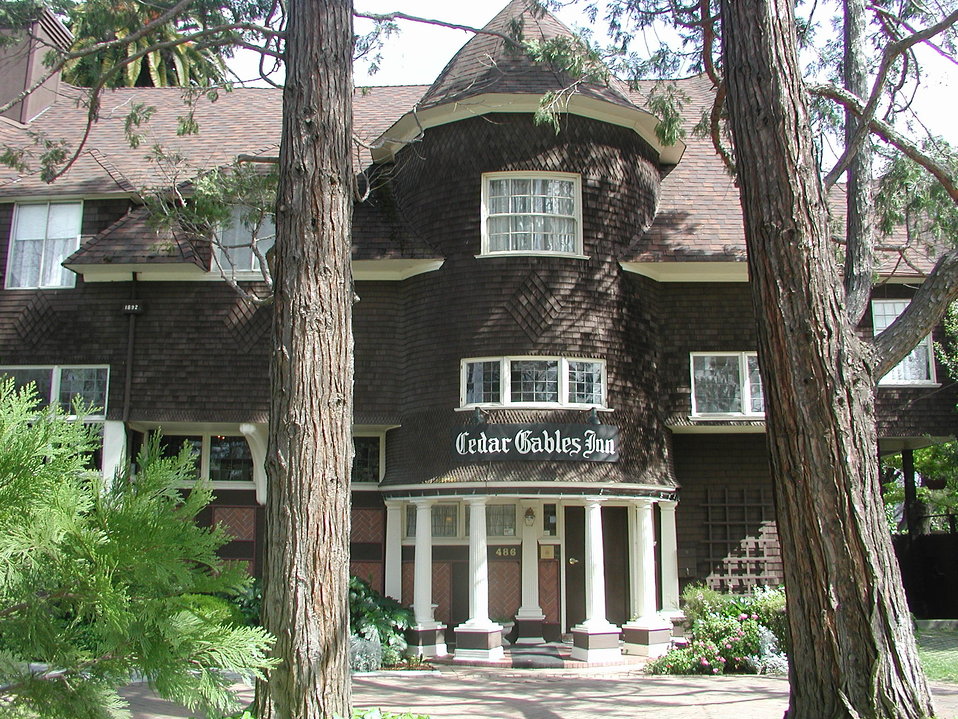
This is a picture of the historic Cedar Gables Inn, built in 1892 by architect Earnest Coxhead.